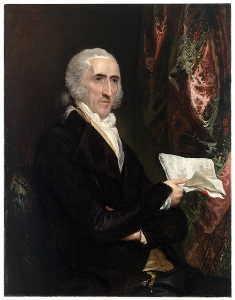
'Dr. Enoch Edwards' by the artist Benjamin West in 1795.